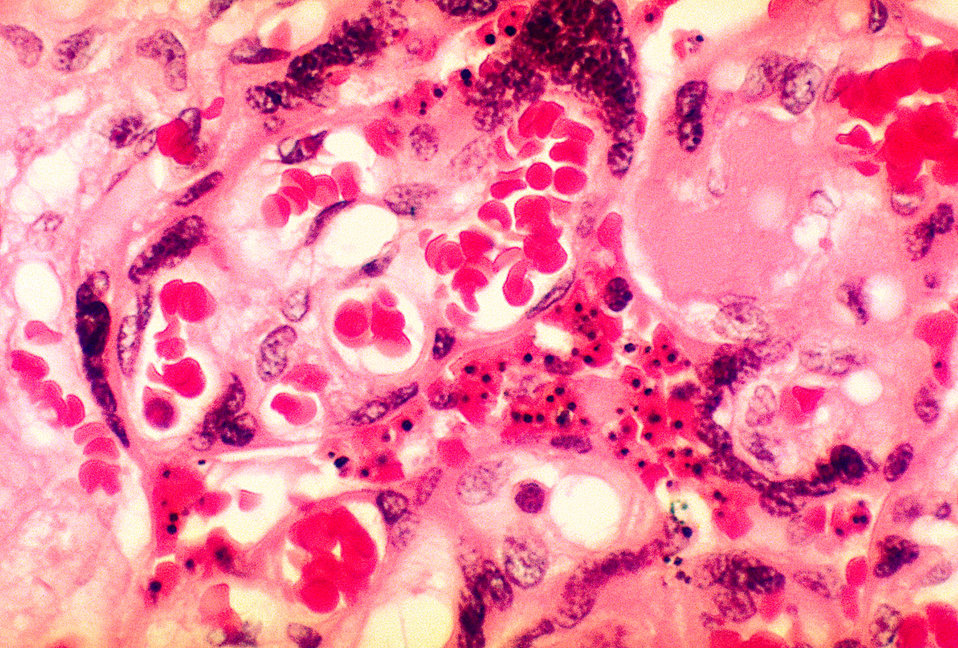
A photomicrograph of placental tissue revealing the presence of the malarial parasite Plasmodium falciparum.